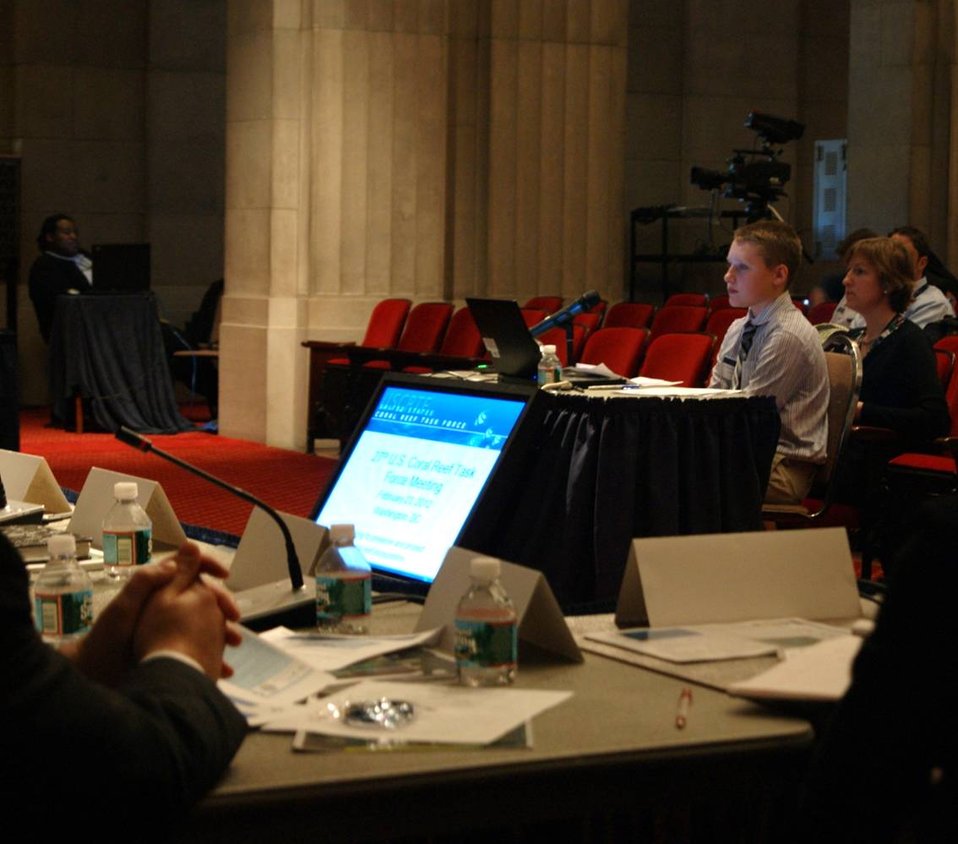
Coral Reef Task Force - Winter Meeting 2012